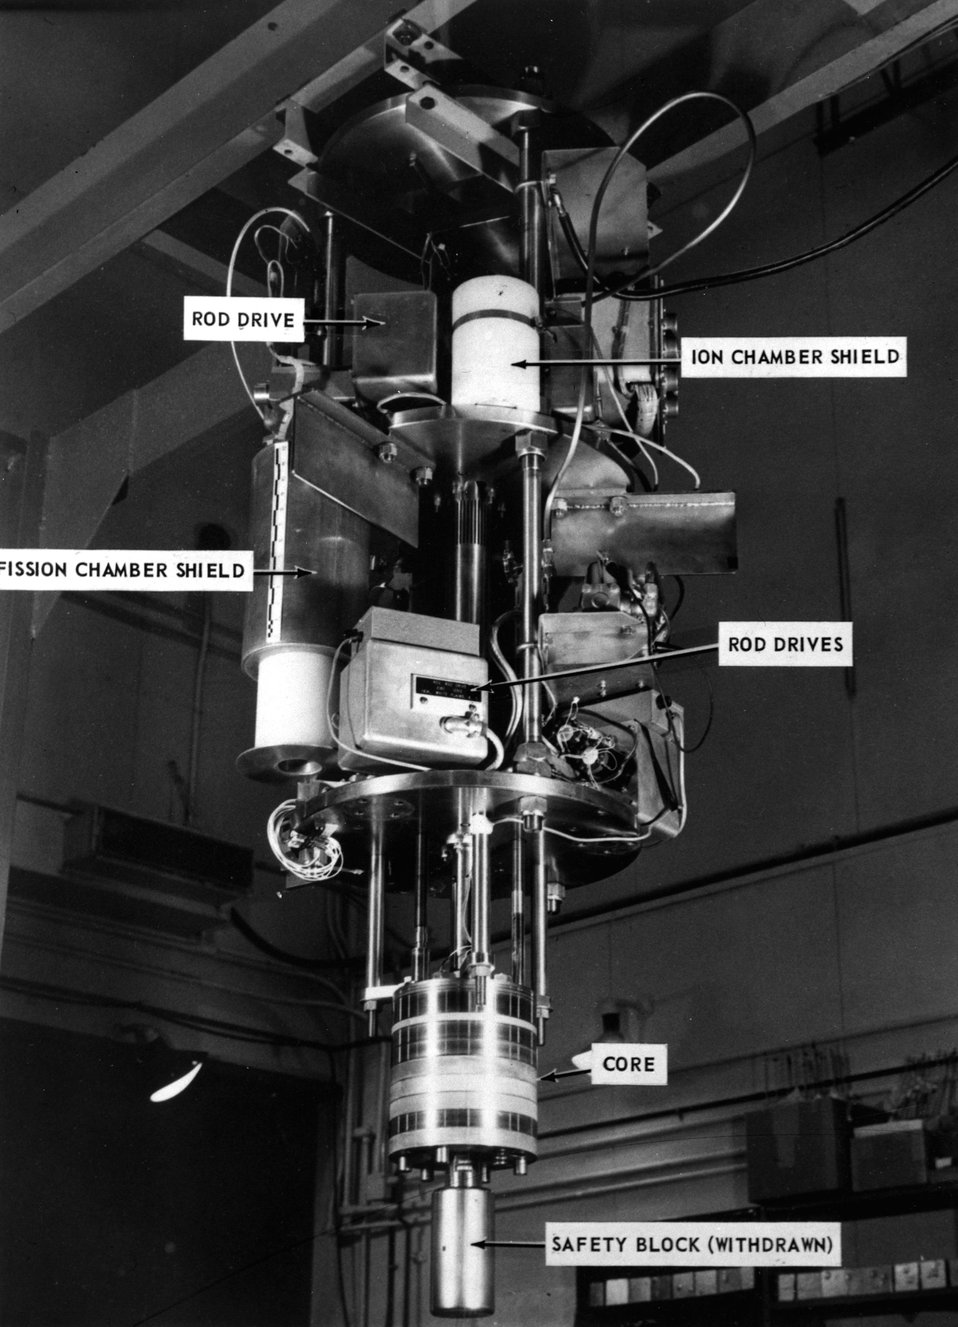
For conducting the early 1962 portion of the BREN studies, the new Health Physics Research Reactor was used as a source of gamma rays and neutrons at the Nevada Test Site. c. 1963